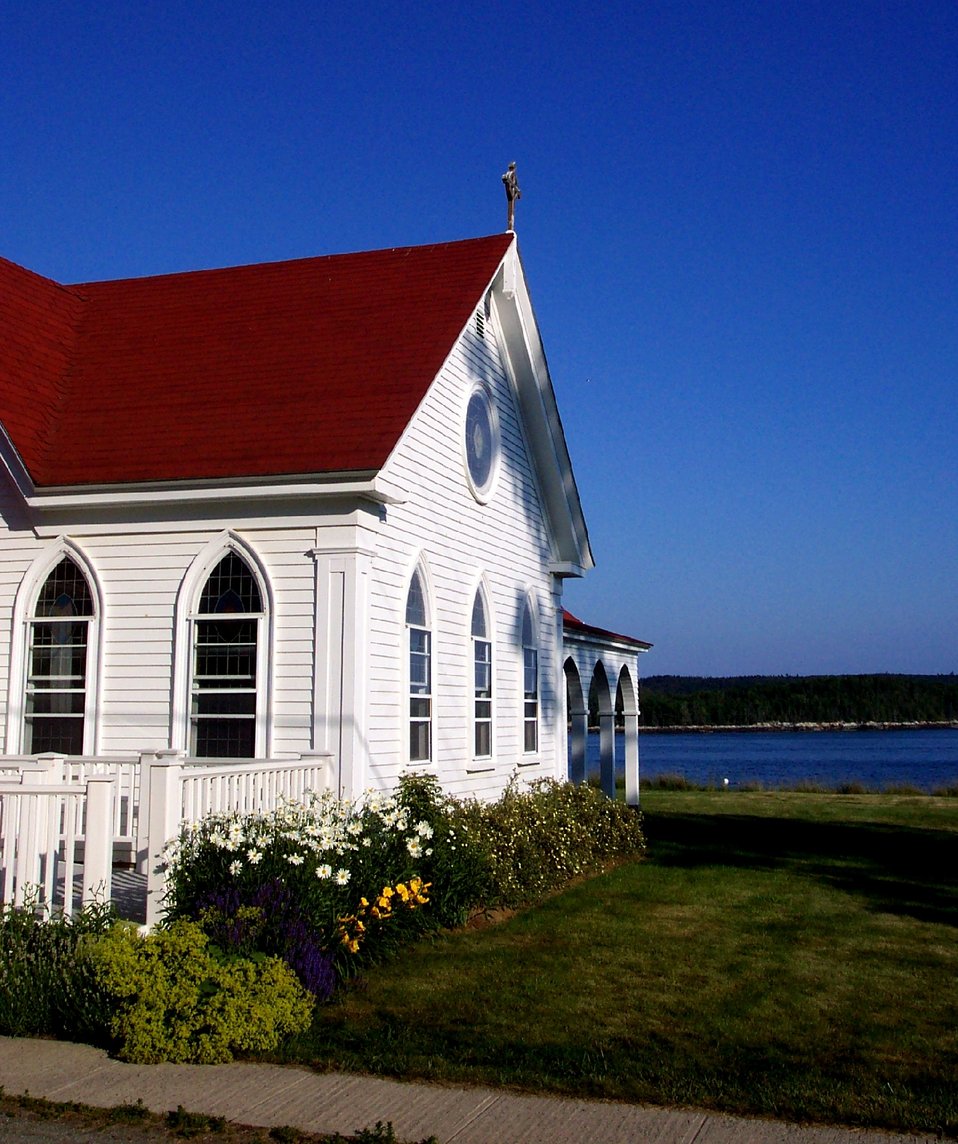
An oceanside church at Castine.